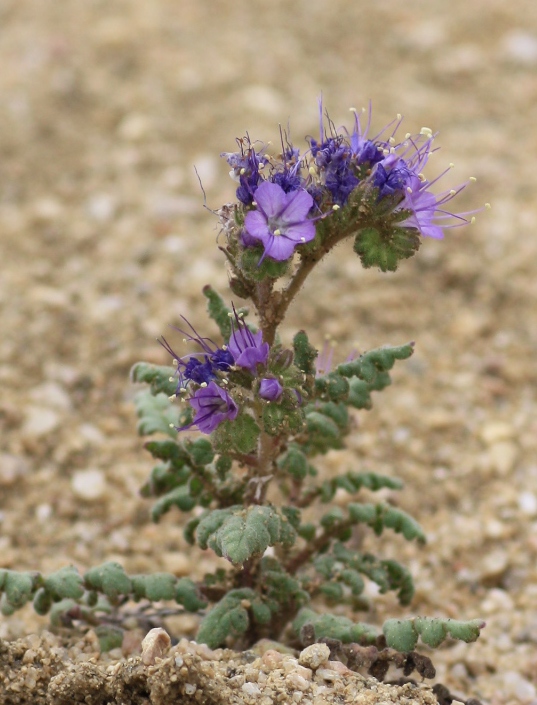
North Park Phacelia

The purple uncoiling flowering stems of North Park phacelia (Phacelia formosula). This member of the waterleaf family (Hydrophyllaceae) is found in “North Park” of north central Colorado, near the small town of Walden. The bright purple flowers and lobed leaf margins make this species easy to spot in July and August. The plant is a biennial, surviving for one year as a rosette of leaves before flowering and dying the following year. The plant is found on barren exposures of the Coalmont Formation that are easily eroded (see the habitat pictures).